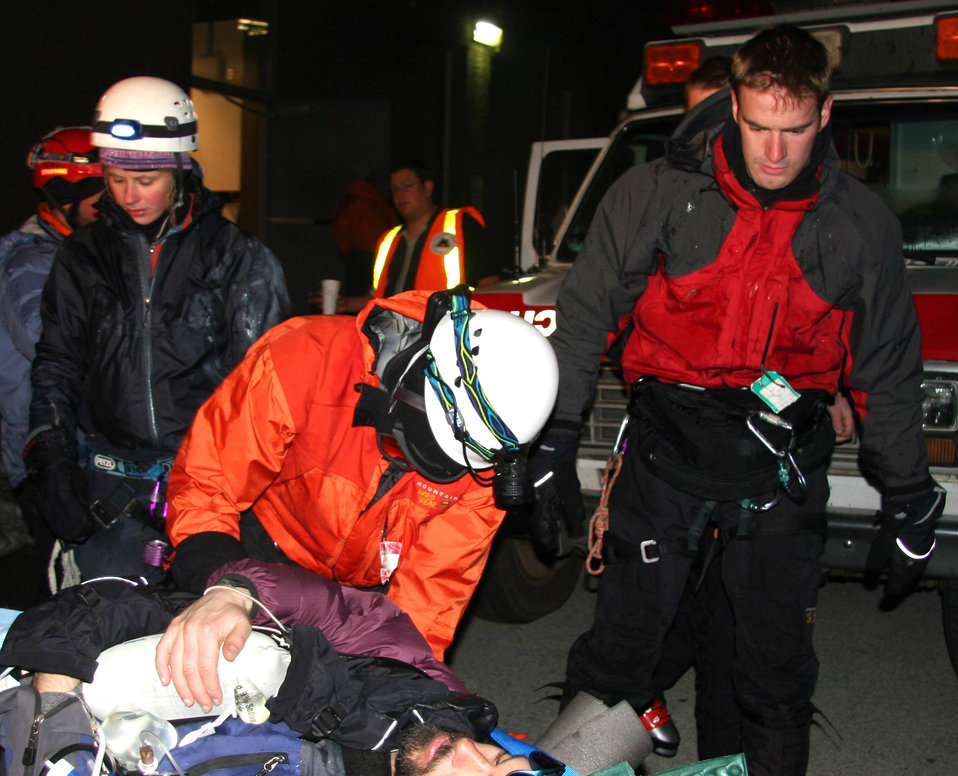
PJs help rescue skier off glacier

Tech. Sgt. Kevin Baum (center) and Staff Sgt Josiah Blanton (right) help move a patient to an ambulance for transport to a hospital on Saturday, May 6, 2006. The pararescuemen from the Air Force Reserve Command's 304th Rescue Squadron were part of a 15-member rescue team. They helped rescue a skier who had fallen more than 300 feet on Mount Hood, Ore. The 304th RQS is in Portland, Ore.